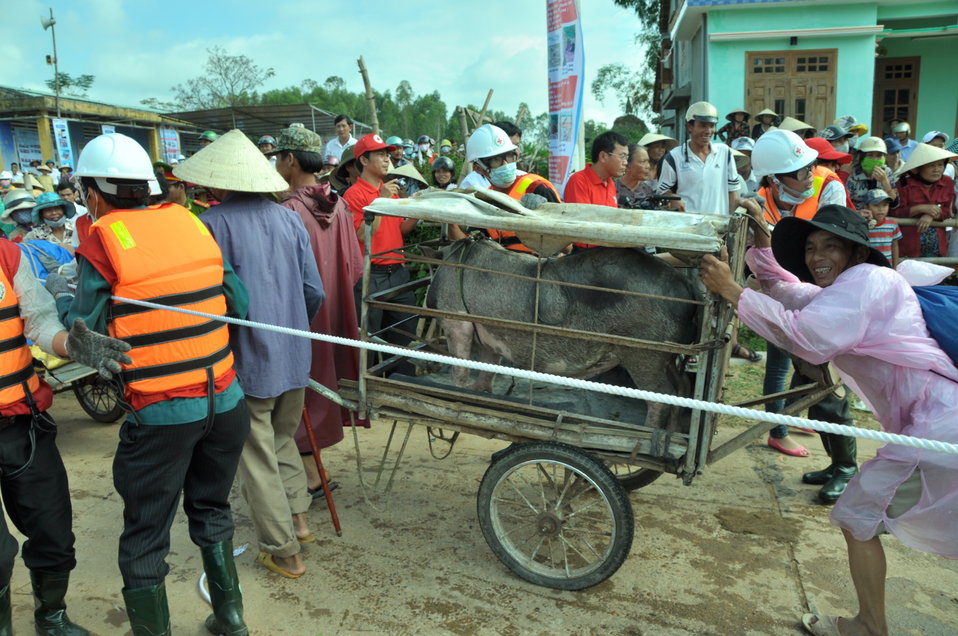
USAID, Red Cross Support Disaster Response Drill in Duy Hoa Commune, Quang Nam Province

Duy Hoa Commune, Quang Nam Province
December 5, 2012